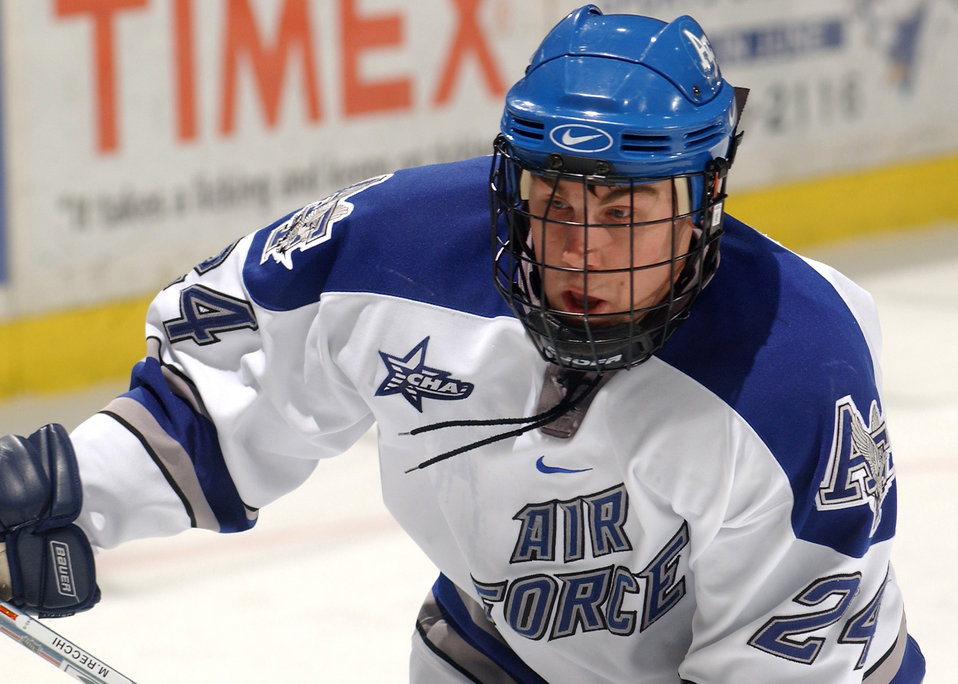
Hockey: Academy player finalists for national hockey award

U.S. Air Force Academy Eric Ehn has been chosen as a finalist for the Hobey Hat Trick as college hockey's top player. The junior center from Dexter, Mich., led the nation in scoring in 14 of the last 18 weeks and ranked 11th in scoring and second in assists.